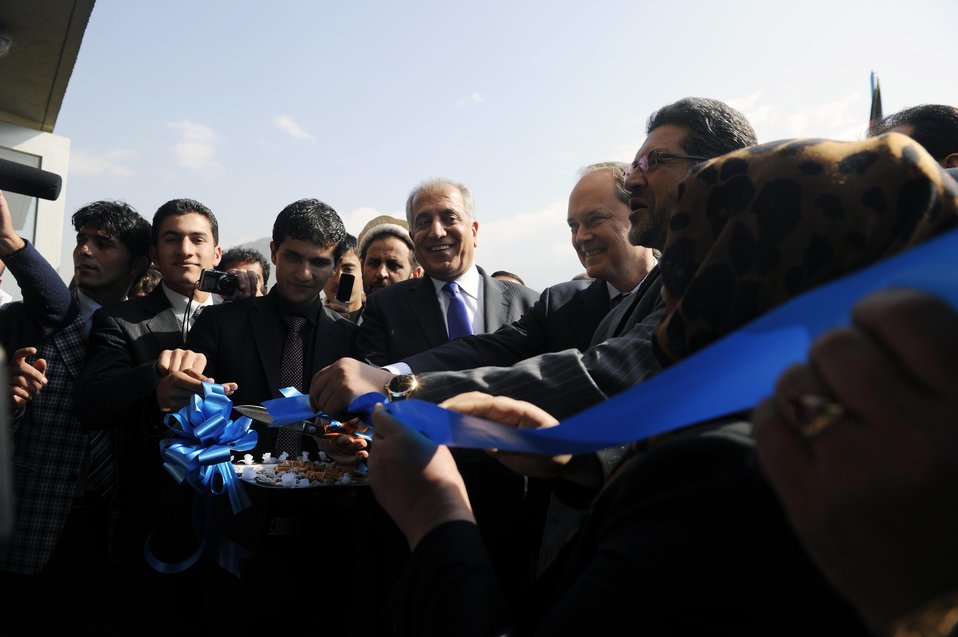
U.S. Deputy Ambassador to Afghanistan James B. Cunningham, Afghan Minister of Education Abdul Rahim Wardak and visitng former U.S. Ambassador to Afghanistan Zalmai Khalilzad officially inaugurated the newly rebuilt Ghazi High School in West Kabul October 23, 2011. Former alumni of the school include both Ambassador Khalilzad and Afghan President Hamid Karzai. The school was destroyed during 30 years of fighting in Afghanistan, and was refurbished by the U.S. Agency for International Development. (Department of State)